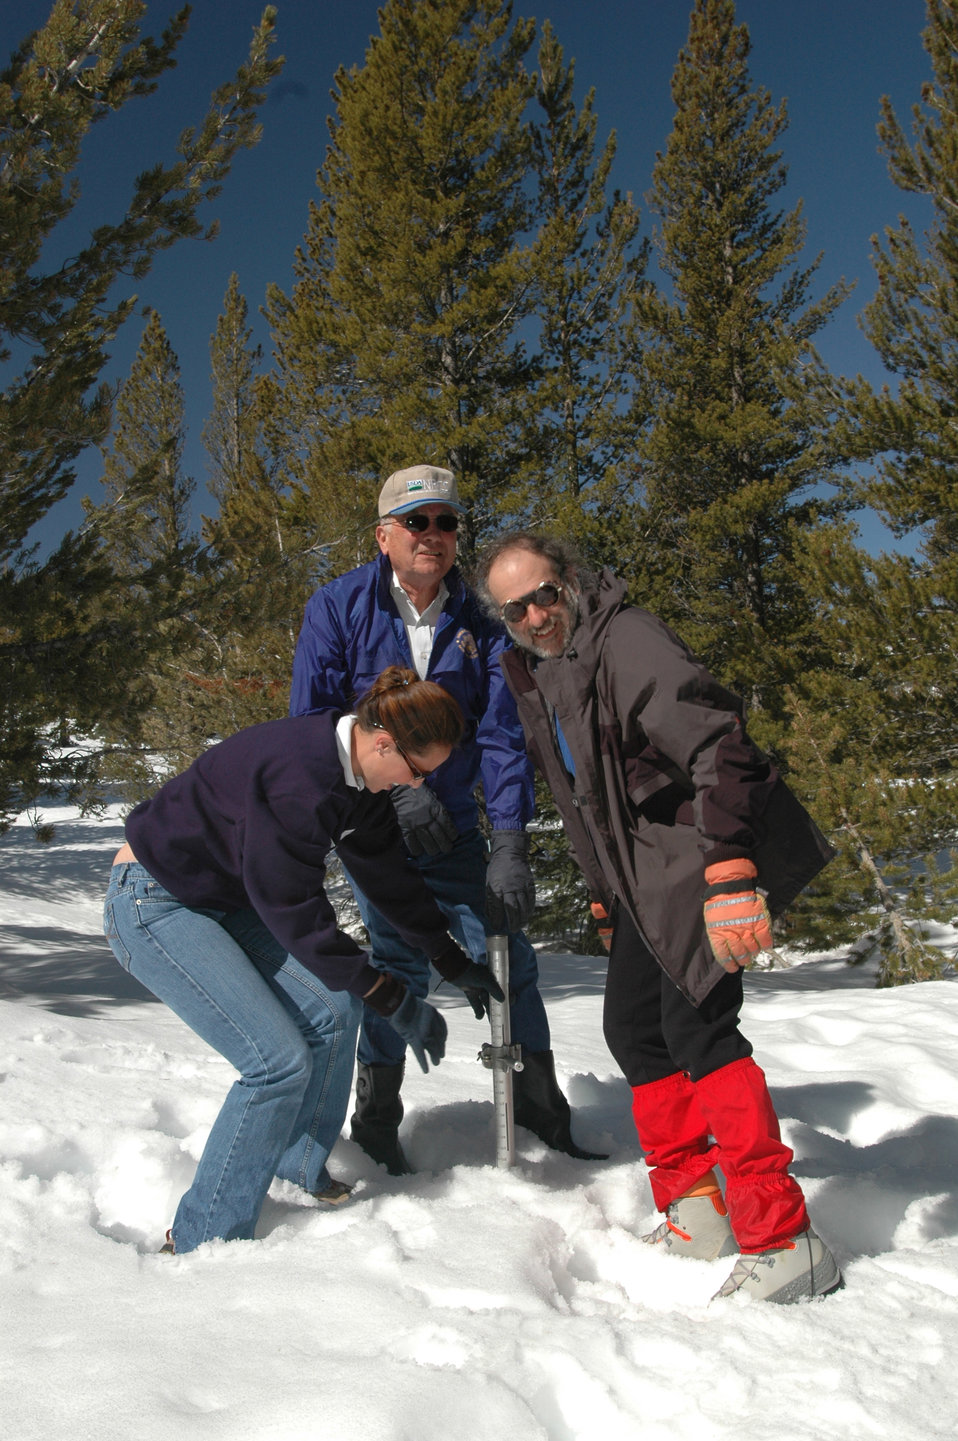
Scientists from the Federal, State, and private cooperative snow survey program directed by the U.S. Department of Agriculture's (USDA) Natural Resources Conservation Service (NRCS) sample the snow pack in Nevada on May 2, 2006. Snow plays a vital role in the lives of the citizens who live in the Western U.S. as a primary source of the water supply. The West's high mountain ranges hold a vast snowpack that provides 50 to 80 percent of the year's water supply and nature cannot be relied upon to provide an uninterrupted, dependable supply of meltwater to meet all the downstream requirements. The successful management of the West’s water supply begins with knowledge of the primary source of water in the West: snow.